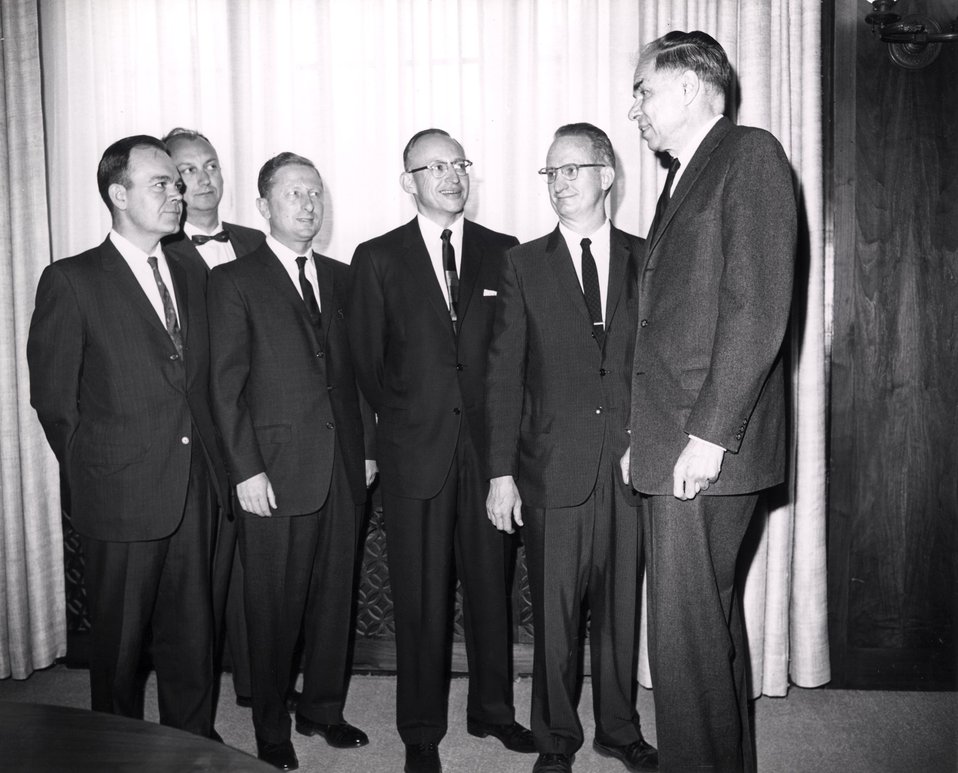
Lawrence Award Ceremony, 1963. Kouts, Tobias, Rosen, Taub, Rainwater and Seaborg.